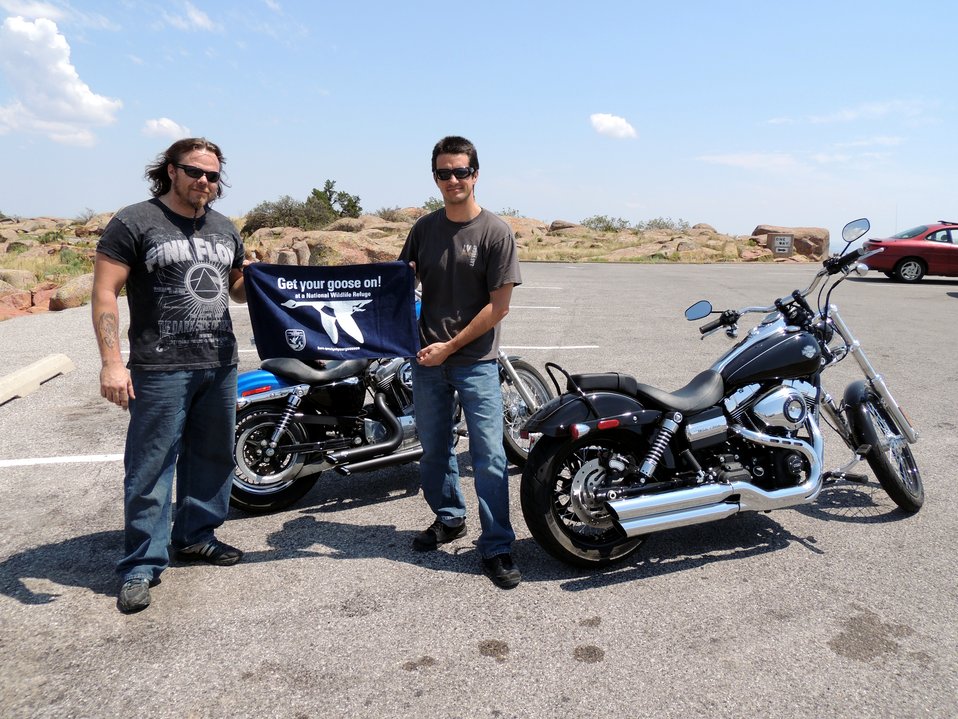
Get Your Goose On!

Wichita Mountains National Wildlife Refuge in Oklahoma.